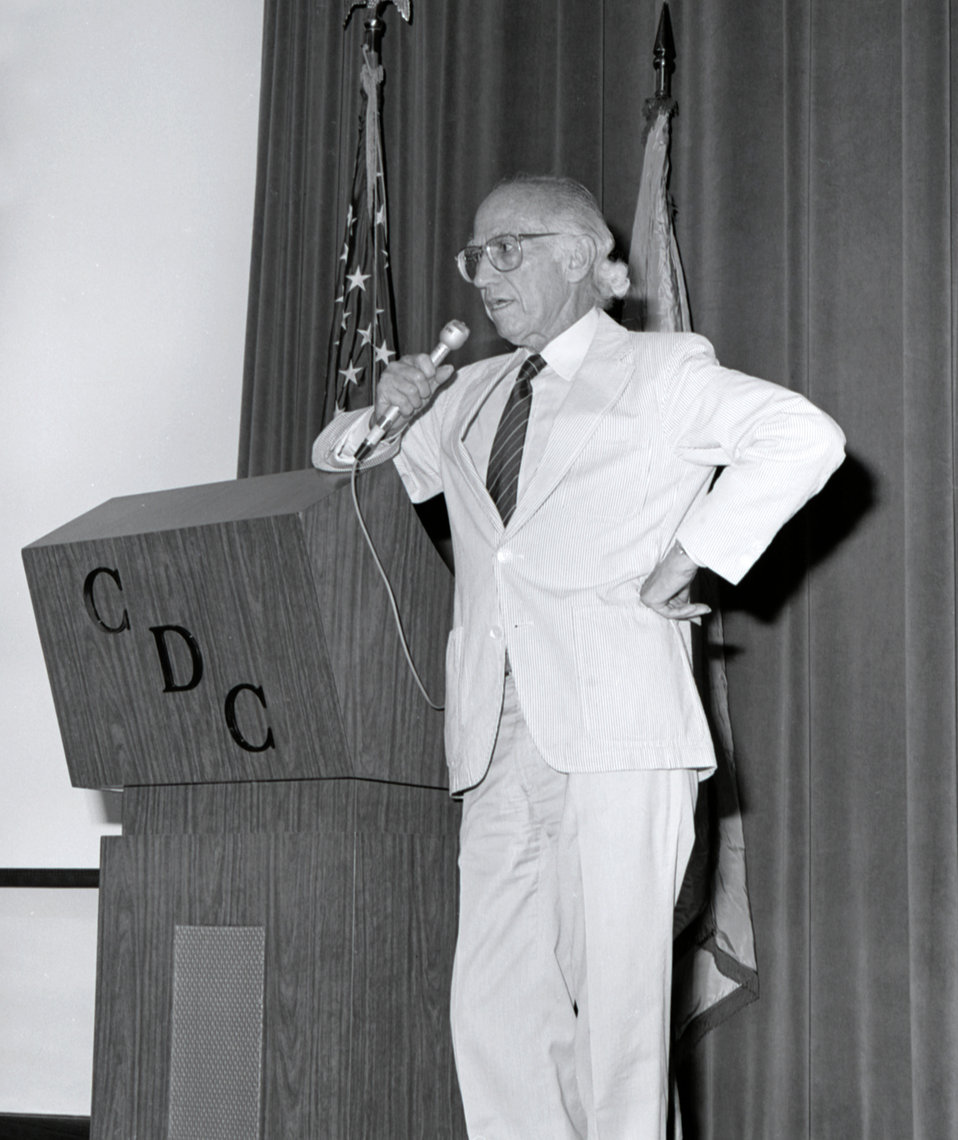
Standing at the podium during his 1988 Centers for Disease Control visit, this photograph showed Dr. Jonas Salk, creator of the first polio vaccine in 1955, fielding questions during his presentation.